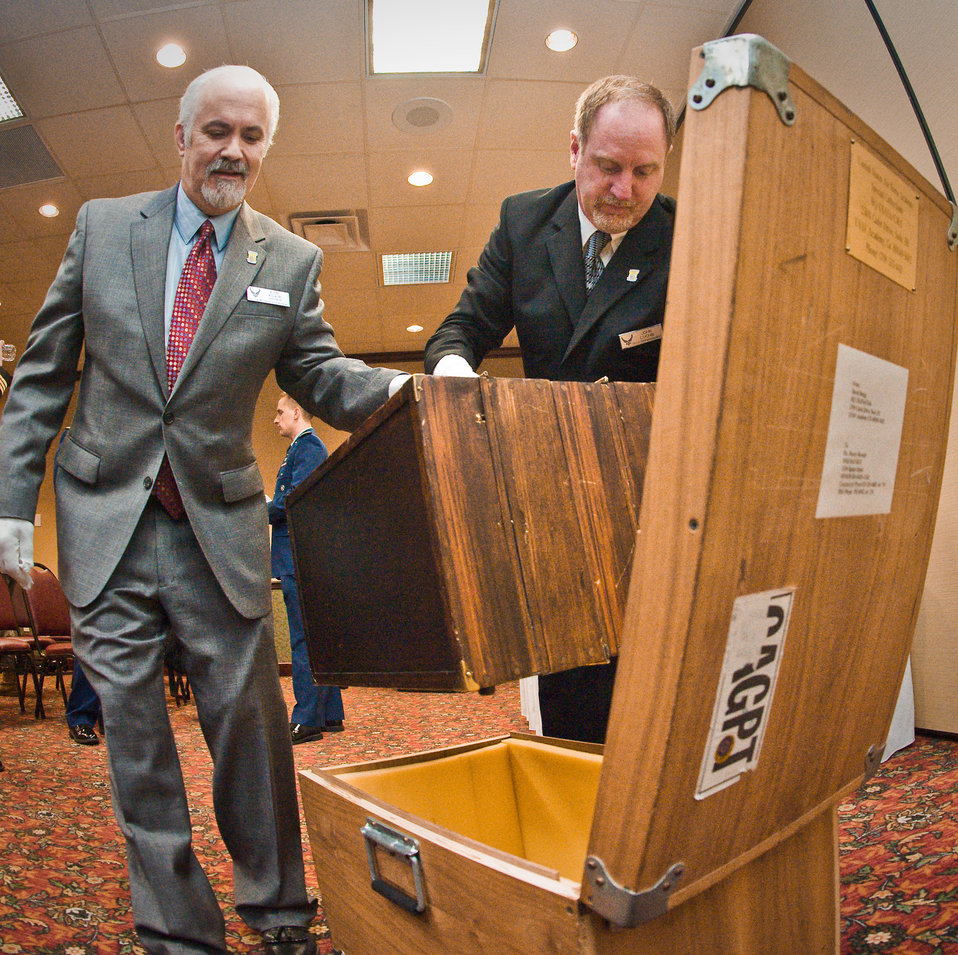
Doolittle Tokyo Raiders' Goblet Ceremony

Robert Adair (grey suit) and John Luchin (black suit), carefully place the Doolittle Raider goblets into a transport case in Fairborn, Ohio on April 6, 2010. Adair is a conservator and Luchin is a collections registrar with the National Museum of the U.S. Air Force who keeps, care and transports the goblets for the Doolittle Raiders. The set was last opened for ceremony in 2008.